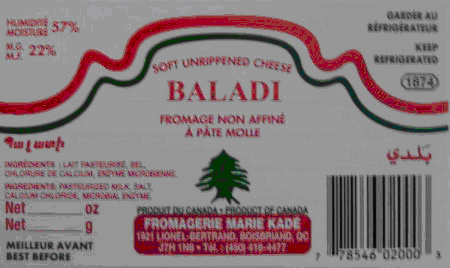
RECALLED - Cheese

December 29, 2011 - Consumer Alert for cheese and milk products due to Listeria monocytogenes contamination.